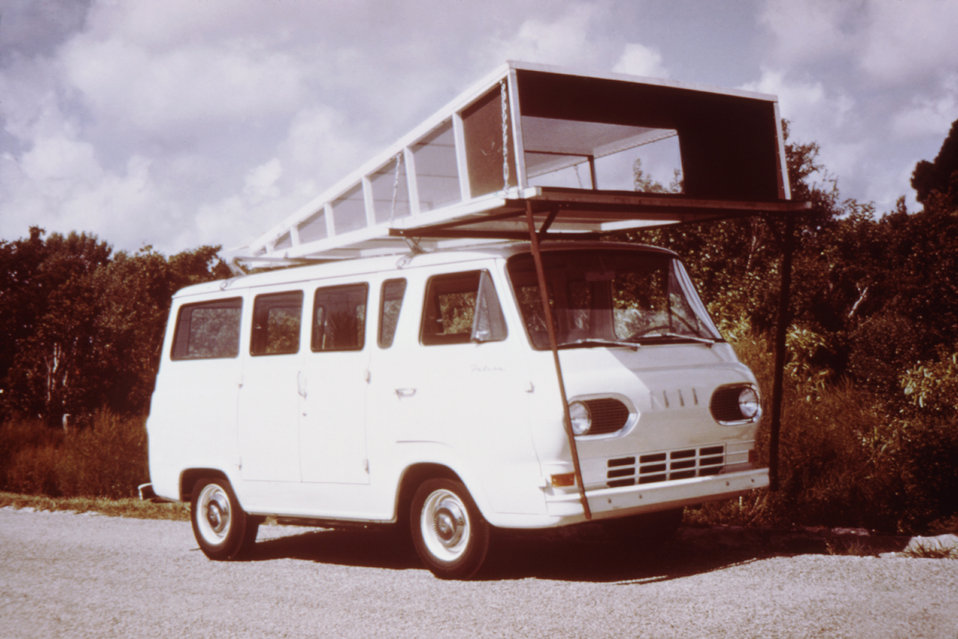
This 1974 photograph depicts a van-mounted trap used to catch mosquitoes to be used in an arbovirus isolation study.